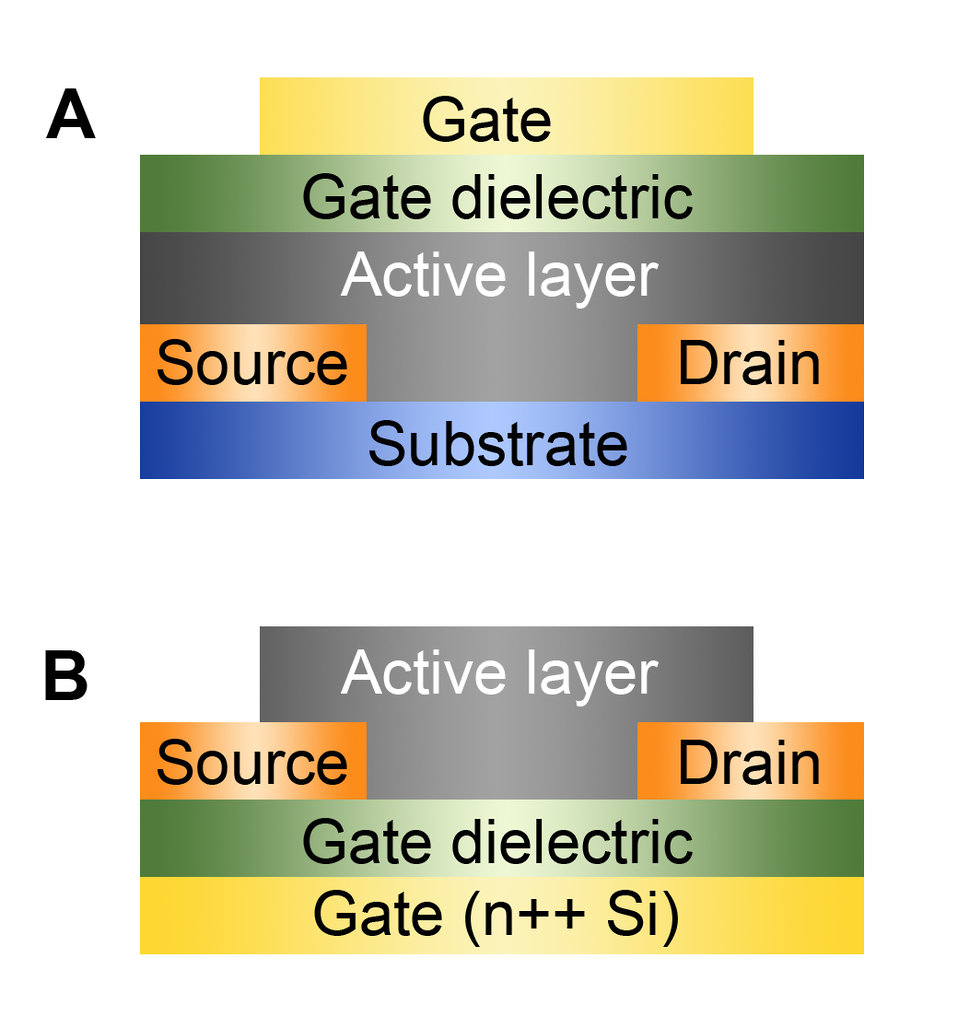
Semiconductors

Restacking organic semiconductors: An improved formulation for a polymer blend semiconductor causes key semiconducting molecules to migrate to the bottom of the active layer, allowing chip designers to replace top-gated structures (a) with more easily manufactured bottom-gate, bottom-contact devices (b).